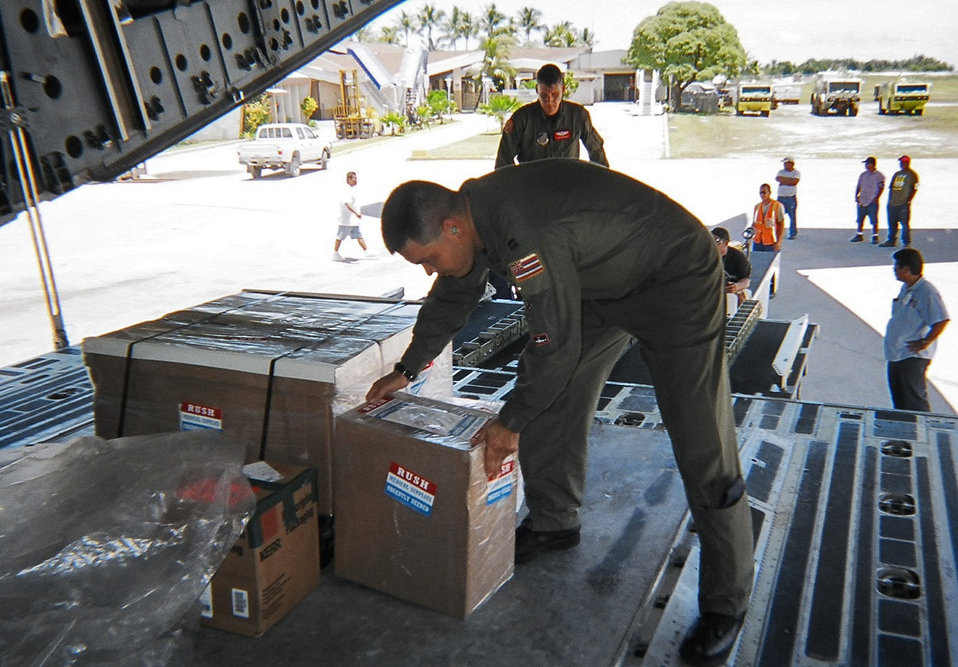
Medical mercy mission

MAJURO, Marshall Islands -- Airmen unload critical medicine and supplies here after a fire decimated the city's only hospital Sept. 16. The Pacific Air Forces' Kenney Headquarters at Hickam Air Force Base, Hawaii, airlifted the lifesaving material within hours after being notified.